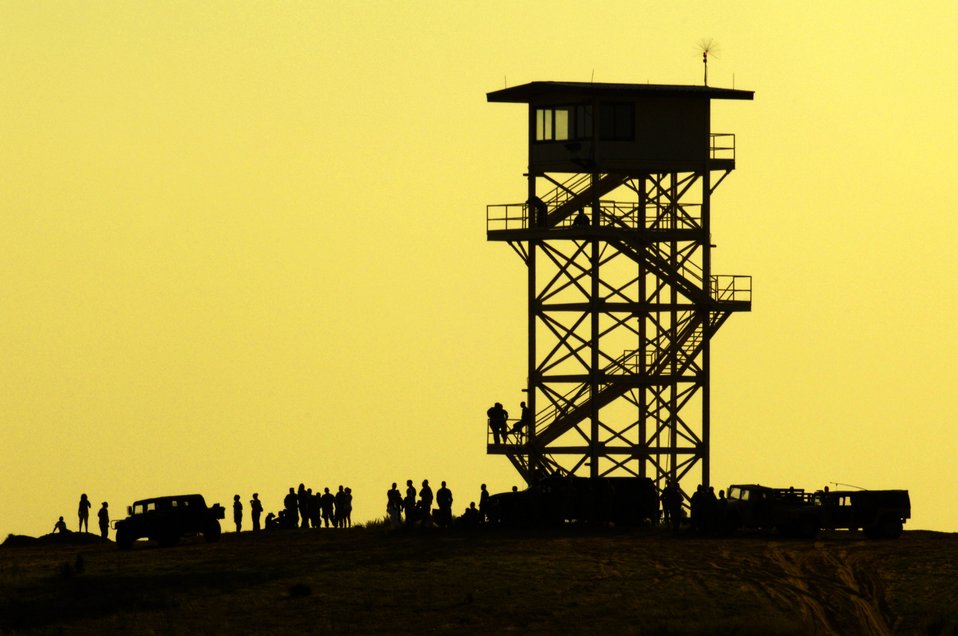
Hercules, Globemaster IIIs support joint training

82nd Airborne Division Soldiers gather to watch a personnel drop during Joint Forcible Entry Exercise June 18 at the Holland Drop Zone at Fort Bragg, N.C. The exercise is a joint airdrop exercise designed to enhance service cohesiveness between Army and Air Force members, allowing both services an opportunity to properly execute large-scale heavy equipment and troop movement.